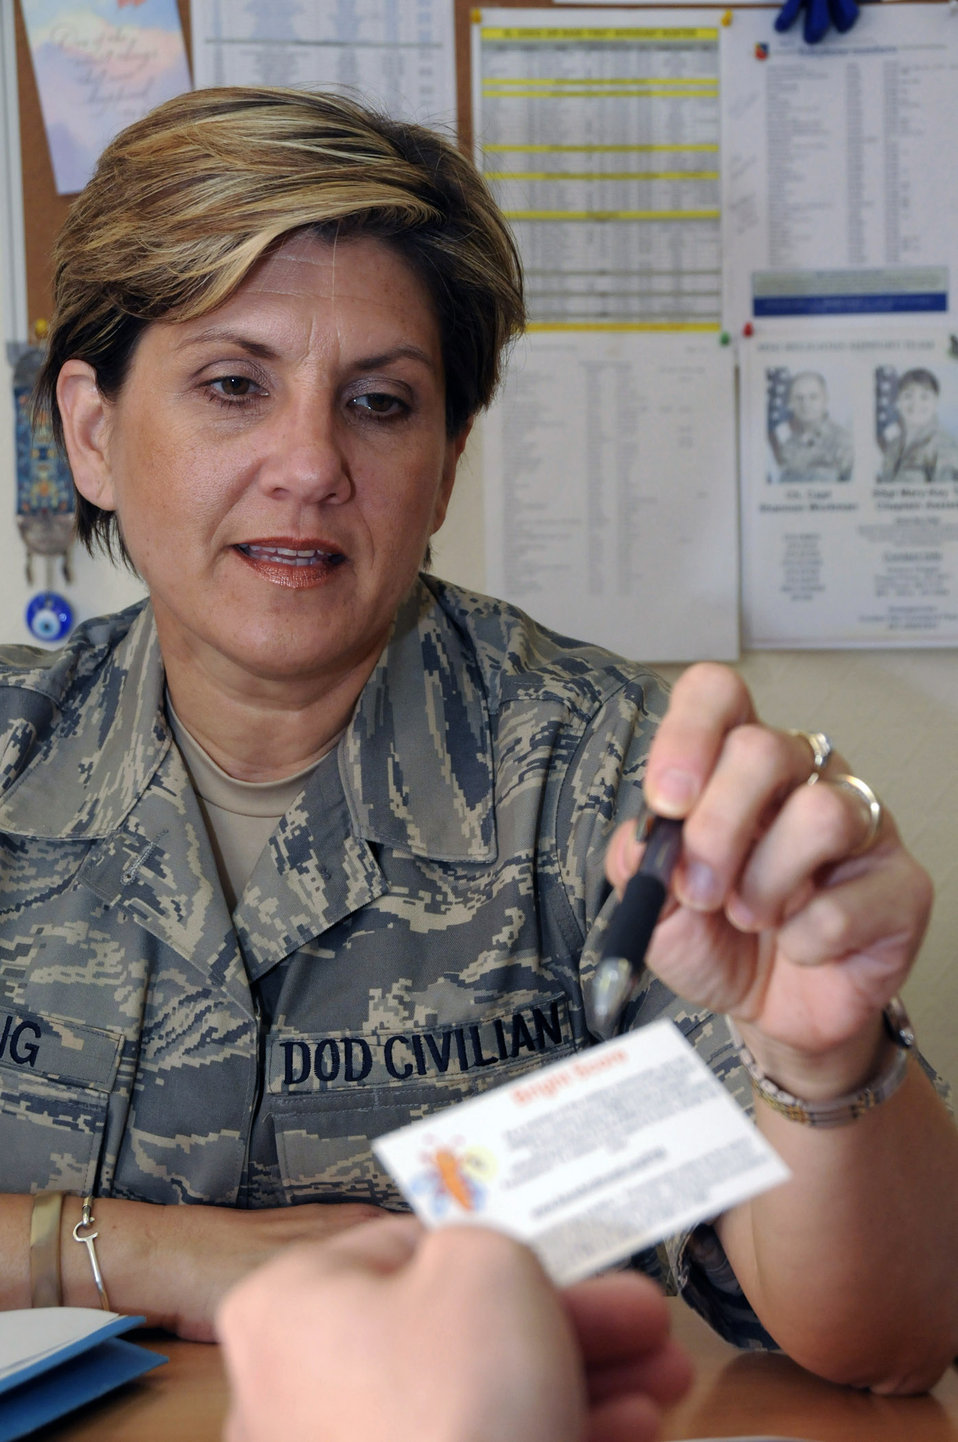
Operations Iraqi Freedom, Enduring Freedom and Joint Task Force-Horn of Africa

Ms. Barbara Lang explains to Staff Sgt. Christopher Doyle, firefighter assigned to the 379th Expeditionary Civil Engineer Squadron, how to use the Bright Score card to get a free credit report and score Sept. 22 at an undisclosed air base in Southwest Asia. Ms. Lang and the other Airmen Readiness Center members work in the only Airmen Readiness Center in the entire area of responsibility. Ms. Lang is the director of Airmen Readiness Center and is assigned to the 379th Expeditionary Force Support Squadron.